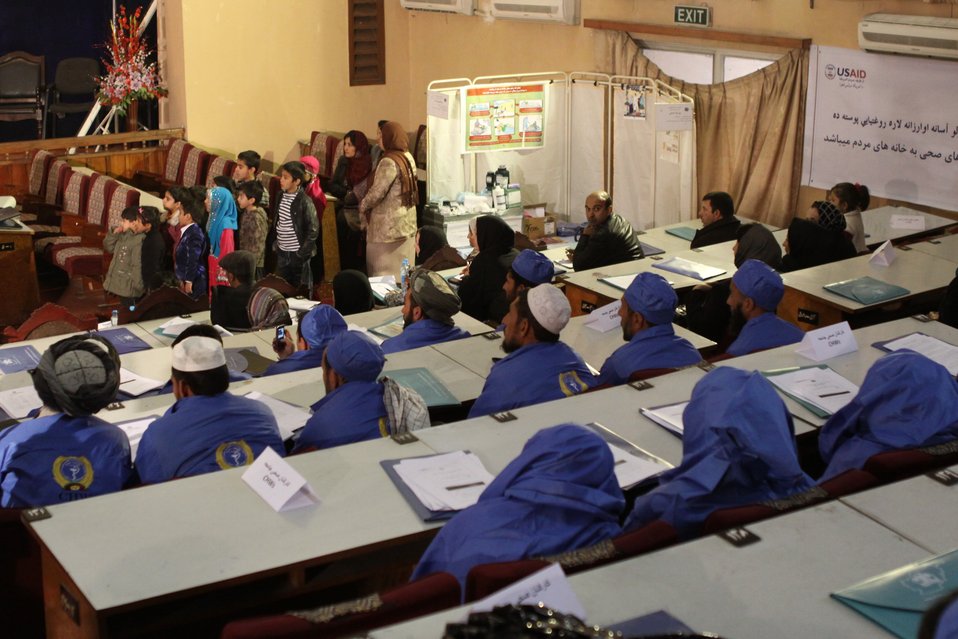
Community Health Workers Celebrated

Kabul, Afghanistan | December 5, 2010 — In support of the United Nations designated International Volunteer Day for Economic and Social Development, Afghanistan’s Ministry of Public Health celebrated its annual Community Health Worker Day today. Acting Minister of Public Health Dr. Suraya Dalil, USAID Senior Deputy Mission Director Robert Hellyer, other government officials, and international donors joined in recognizing the critical contribution of community health workers in Afghanistan and encouraging them to continue their voluntary support to their communities.
The event praised the contributions of the more than 22,000 volunteers throughout the country who deliver community level health-education, counseling, and services out of village health posts located in private homes. The Ministry of Public Health envisioned that community-based healthcare programs will actively encourage communities and families to adopt healthy lifestyles and behaviors, and provide families access to high quality and socially acceptable preventative medicine and life-saving services.
“We have 22,000 community health workers in Afghanistan that are able to implement the basic and standard medicines. They all have been trained through a job description,” said Minister Dalil. Addressing the health workers, she added, “I am proud and feel powerful that I have people like you.”
USAID-funded health projects collaborate closely with the Ministry of Public Health to improve the health and nutritional status of Afghans, provide quality primary healthcare, and promote healthy behaviors at the community and household-levels. USAID supported the training of more than 9,000 of the volunteer community health workers currently working in Afghanistan.
“On behalf of the American people, I congratulate the Community Health Workers for their diligence to gain the skills and knowledge necessary to serve their communities in this important role,” said USAID Senior Deputy Mission Director Hellyer. “USAID strongly supports community based health care and believes that quality community-based health services are essential to reaching Afghanistan’s Millennium Development Goals.”
To support the Basic Package of Health Services, USAID assisted in developing the community health worker training manual, helped train community health worker supervisors and master-trainers, facilitated in-service training, and produced and developed reporting tools, job aids, and education materials.